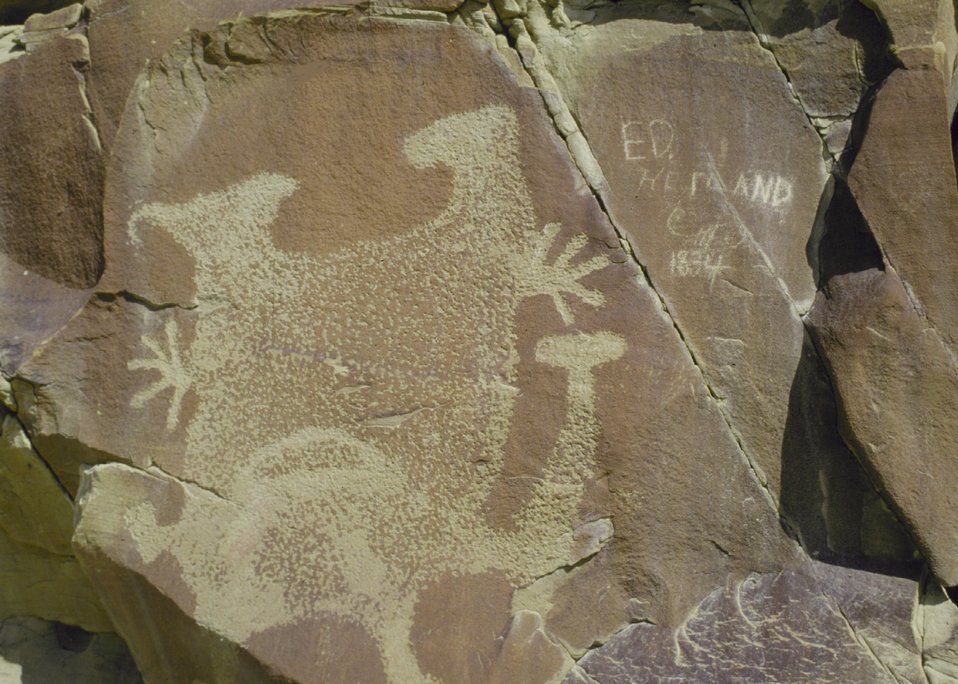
A petroglyph on Legend Rock in Big Horn Basin, Wyoming.